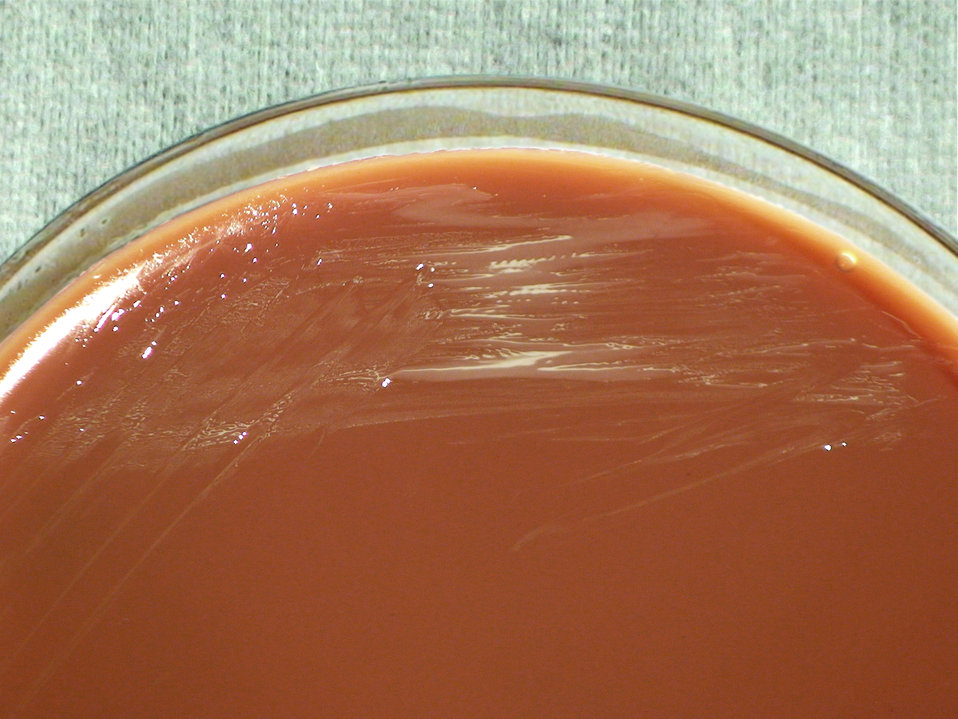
This photograph depicts the colonial morphology displayed by Gram-negative Brucella suis bacteria, which was grown on a medium of chocolate agar, for a 24 hour time period, at a temperature of 37�C. See PHIL 12476 and 12477, for views of these bacteria grown on the same medium and temperature, but at twice the time period (48hr). Also note both PHIL 12478 and 12479, again depicting B. suis organisms, which were grown on both the same medium and temperature, but at three times the time period (72hr). Brucella spp. bacteria are pathogenic towards humans, and cause a disease known as brucellosis.